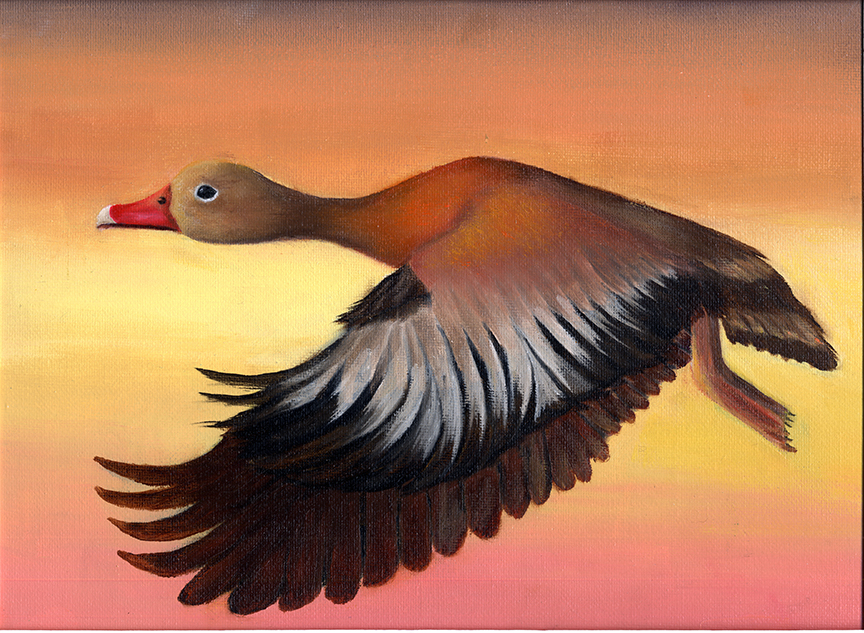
JRDuck2013NH

2013 Junior Duck Stamp Best of Show-New Hampshire